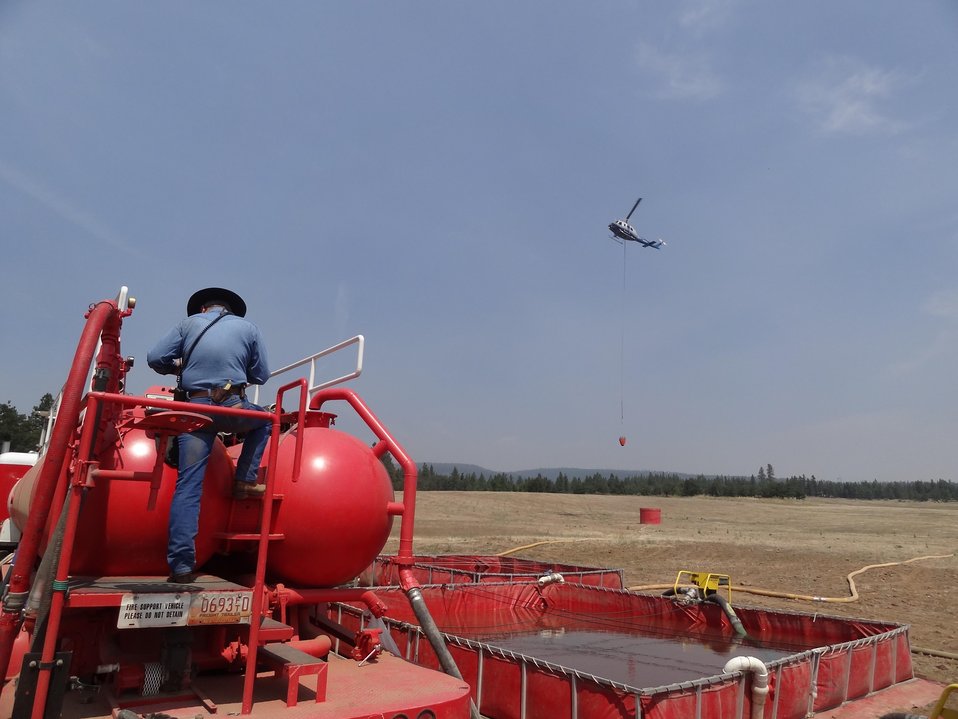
Batch plant water station provides water to helicopters for the Mile Marker 28 Fire. The Mile Marker 28 Fire near Goldendale, WA began on Jul. 24, 2013 is under investigation and has consumed approximately 20,337 acres. The fire is approximately 25% contained.